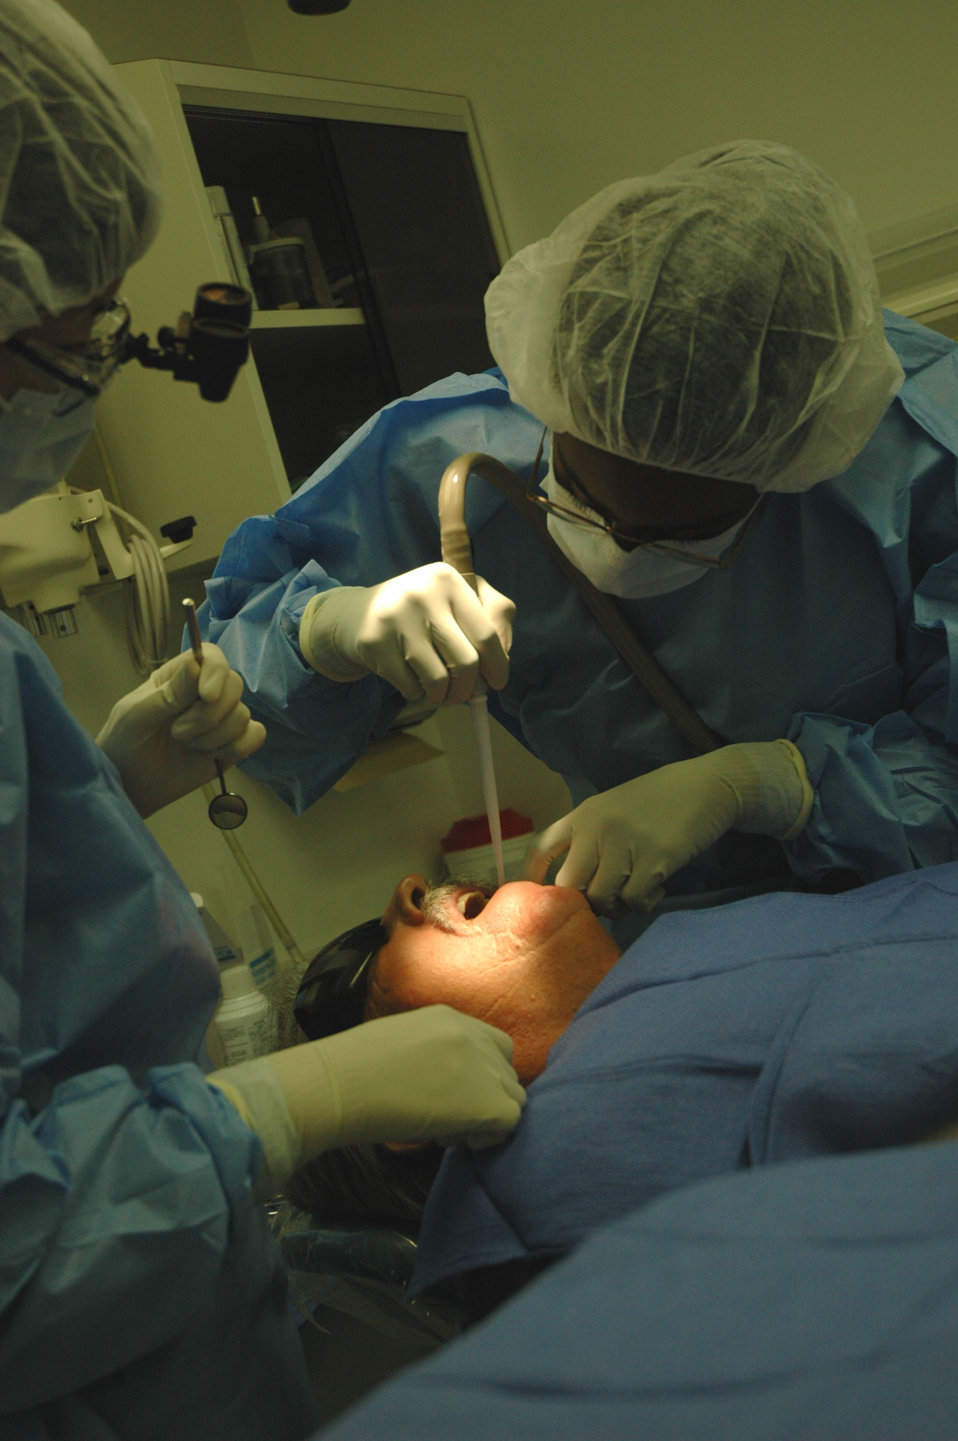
Dental residency program fills experience gap

Capt. (Dr.) LiKuei Hung administers suction to a patient during an extraction Monday, March 6, 2006, at Barksdale Air Force Base, La. Doctor Hung is assigned to the 2nd Dental Squadron.